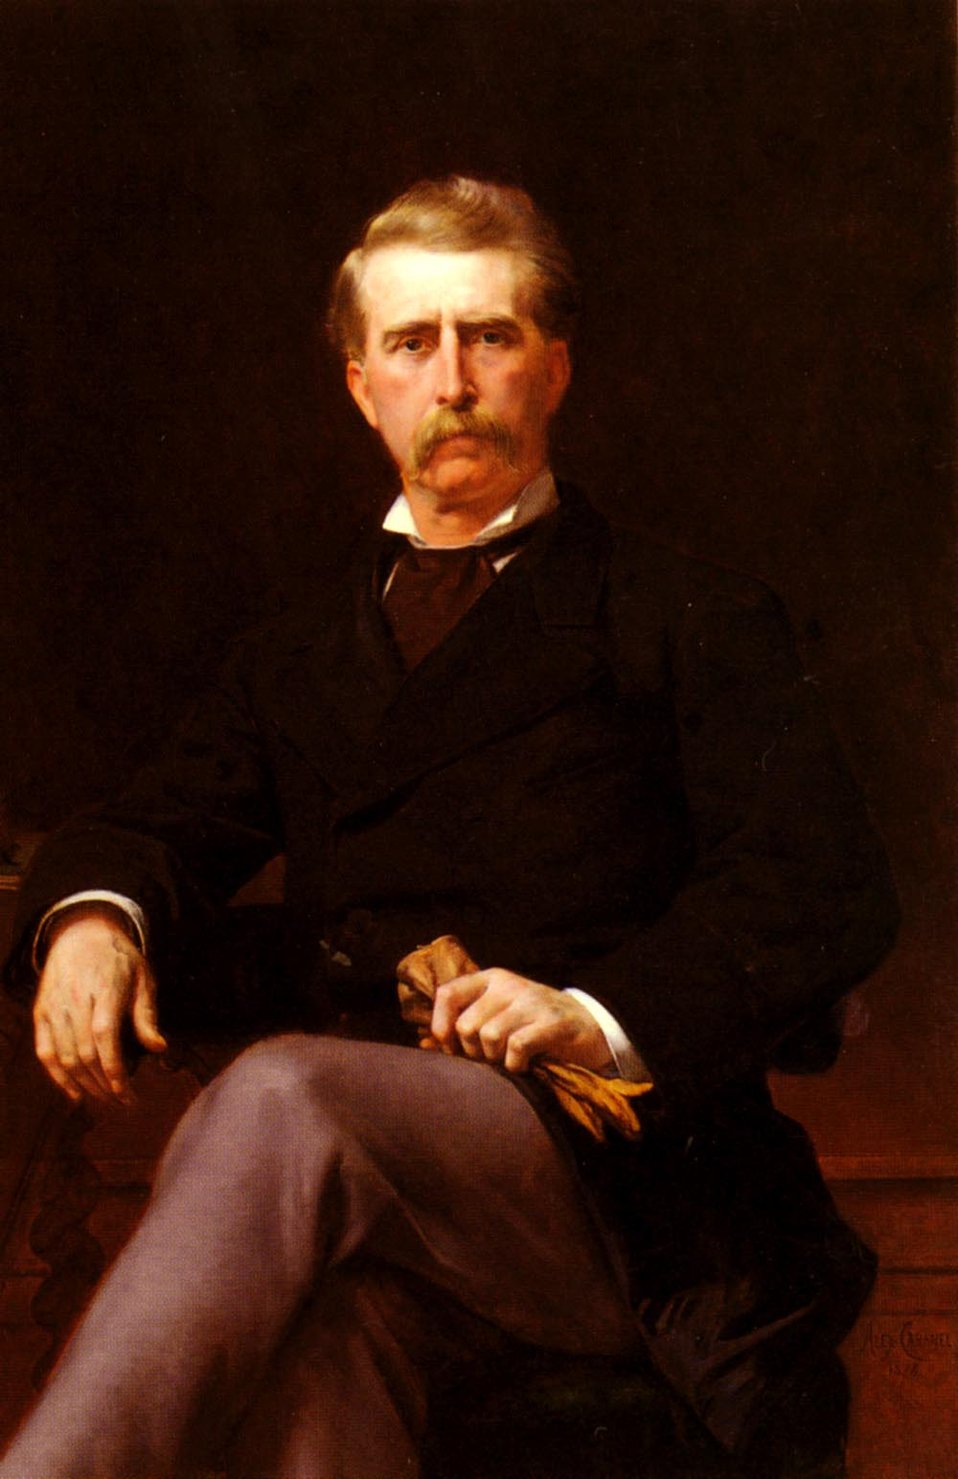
Alexandre Cabanel - John William Mackay